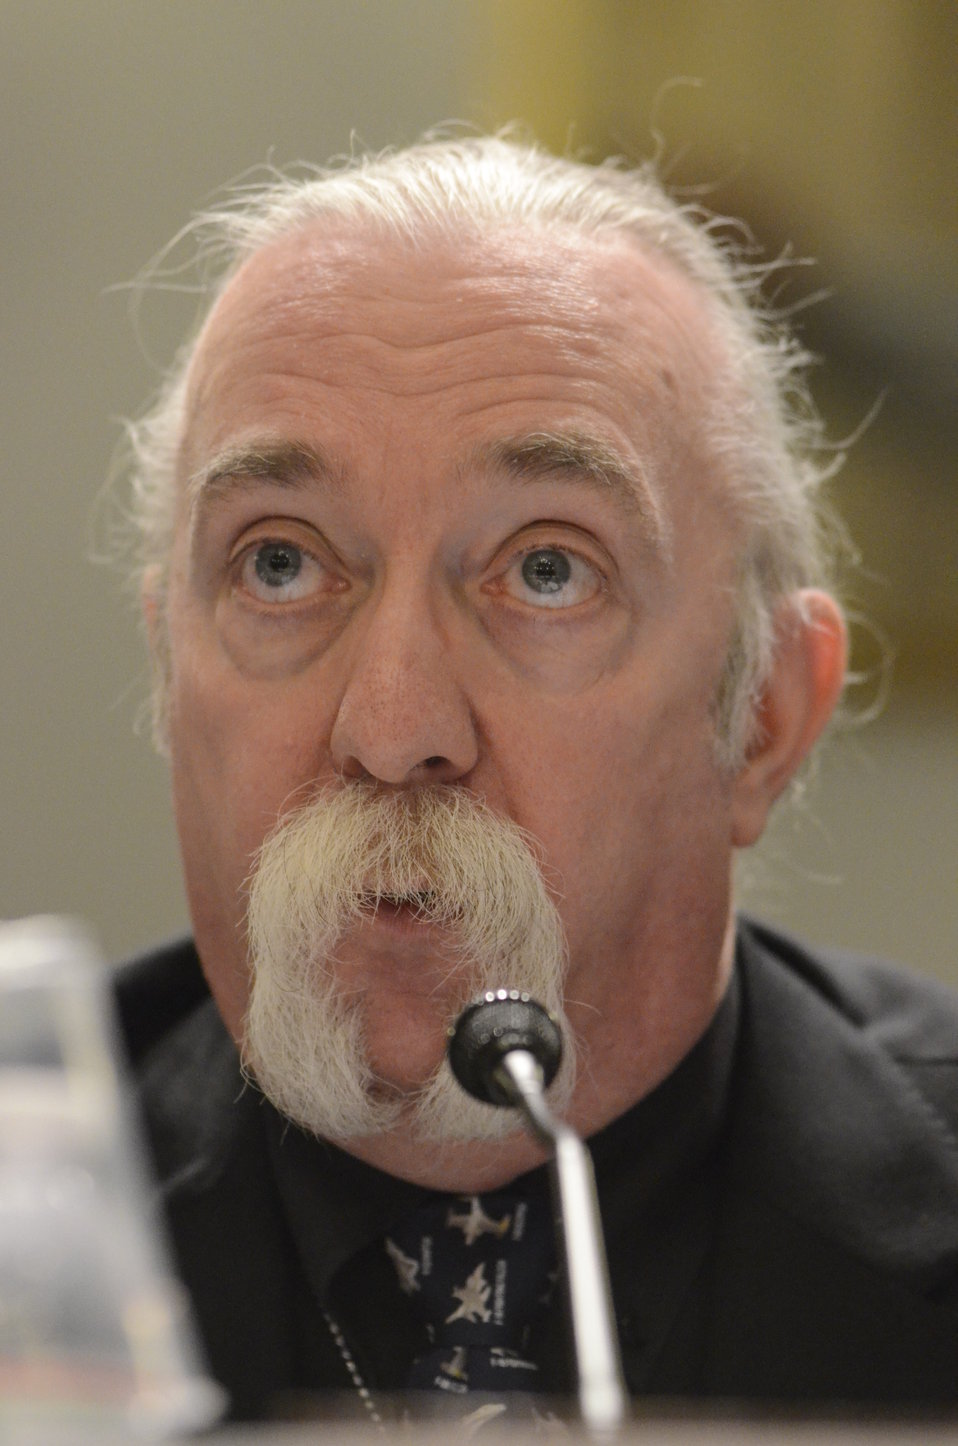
Music producer and former member of the Steely Dan and Doobie Brothers guitarist Jeff 'Skunk' Baxter testifies on Retailers & Entertainers Lacey Implementation & Enforcement Fairness Act & Freedom from Over-Criminalization & Unjust Seizures Act at the Longworth House Office Building in Washington, D.C. on Tuesday, May 8, 2012.